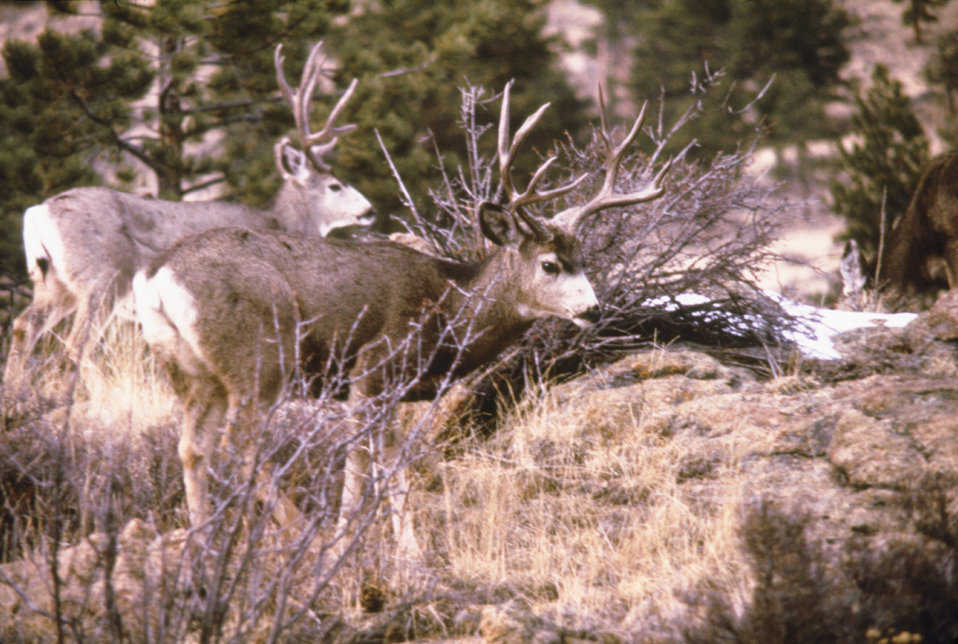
These are mule deer, Odocoileus hemionus, the major host of the adult winter ticks, Dermacentor albipictus.